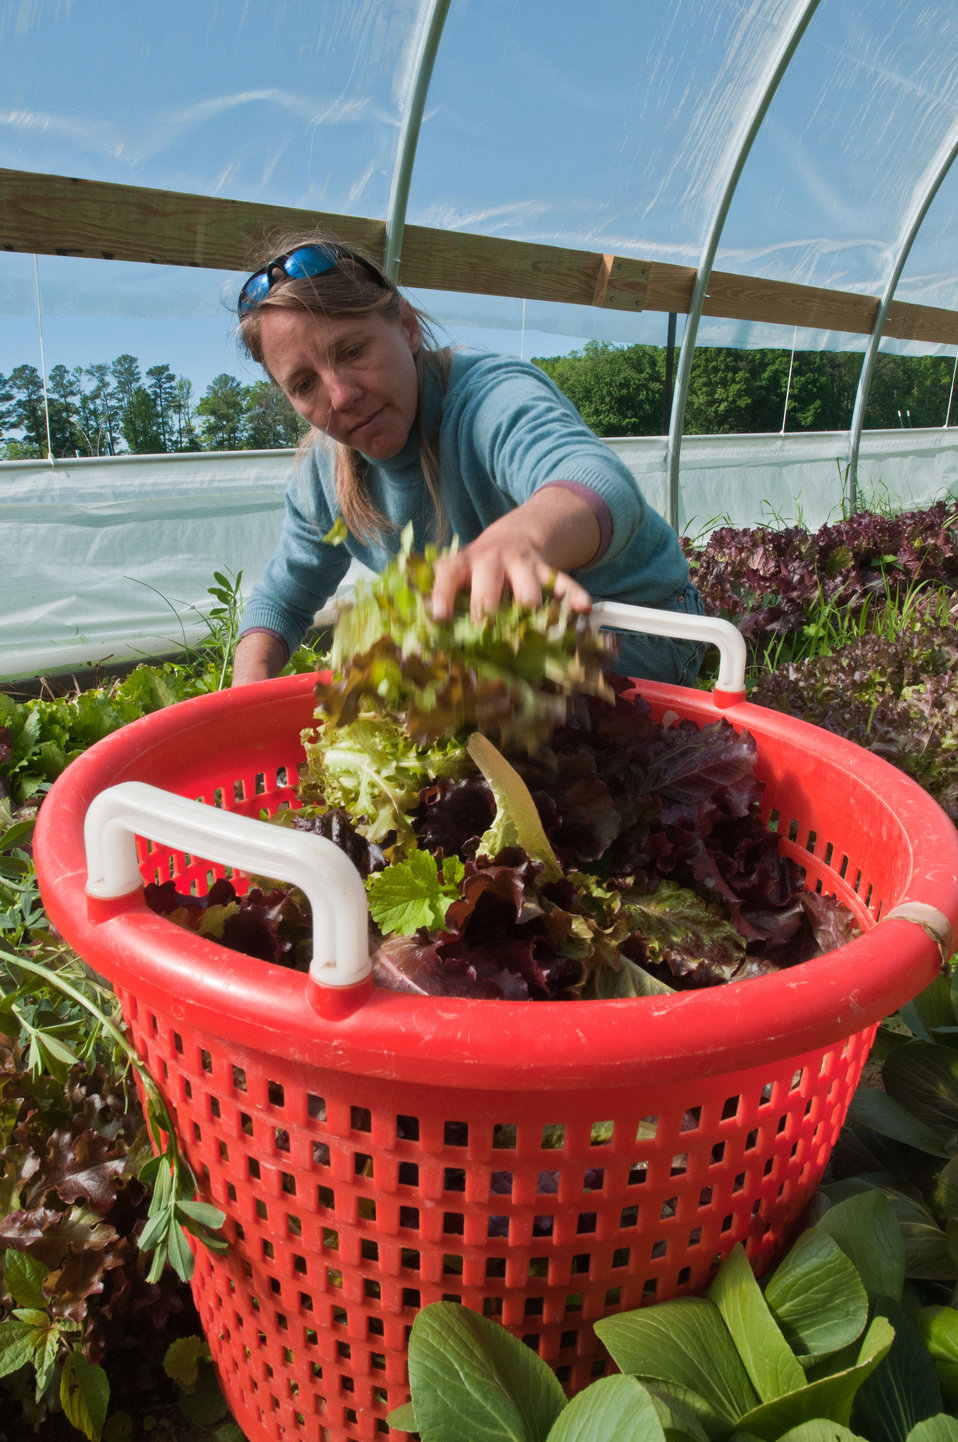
Amy's Organic Garden in Charles City, VA, on Thursday, May 5, 2011. Owner Amy Hicks harvesting greens at her farm. Ms. Hicks' farm participates with Fall Line Farms a local food cooperative in the Richmond, VA area that offers a wide variety of household food staples and specialty items on an ever changing inventory of fruits, vegetables, meats, soaps, eggs, cheeses, flowers, honey, pastas, sauces, syrups, baked goods, mushrooms, flour and grains. Suppliers post what they have on a Lulus Local Food online listing and customers can make their selection. Every Thursday suppliers deliver orders to, one of several pick-up points, designated by the customers in or around the Richmond area.